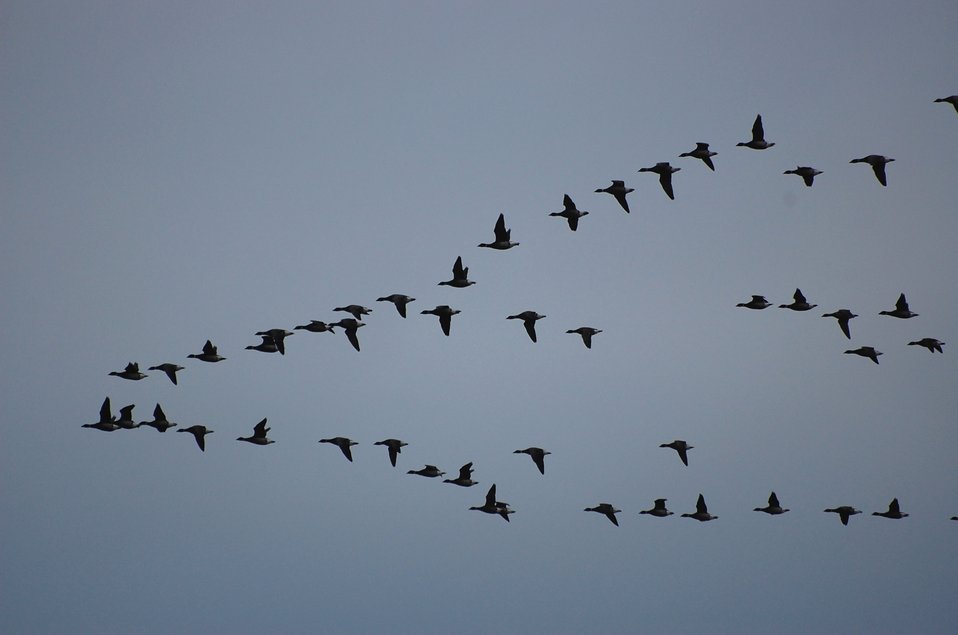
Brant, Izembek Lagoon, Izembek National Wildlife Refuge
Photo by Kristine Sowl, USFWS, Public domain